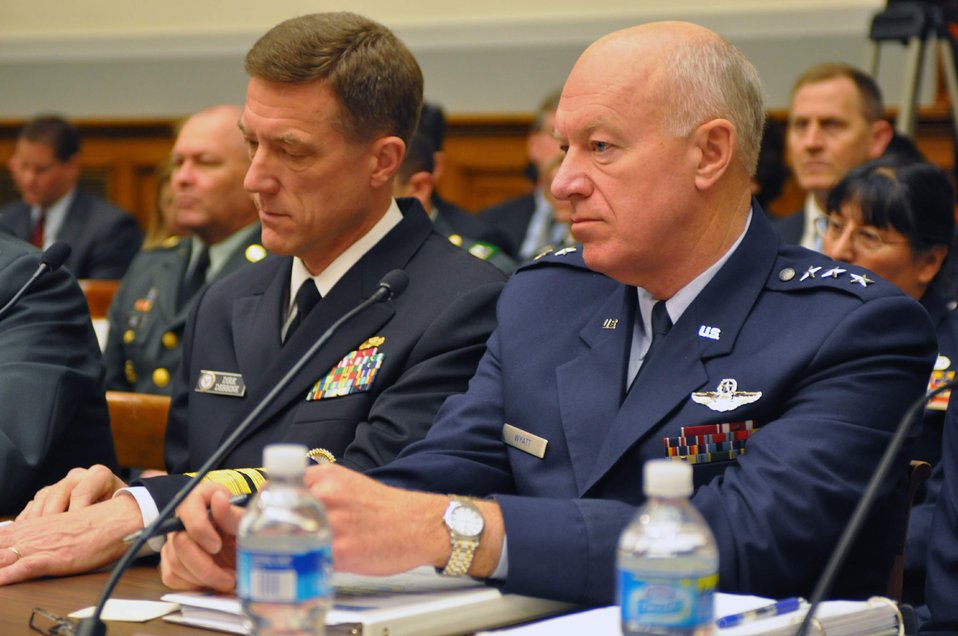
Guard at full strength

Lt. Gen. Harry M. Wyatt (right), director of the Air National Guard, testifies March 3 before the House Armed Services Committee in Washington, D.C.